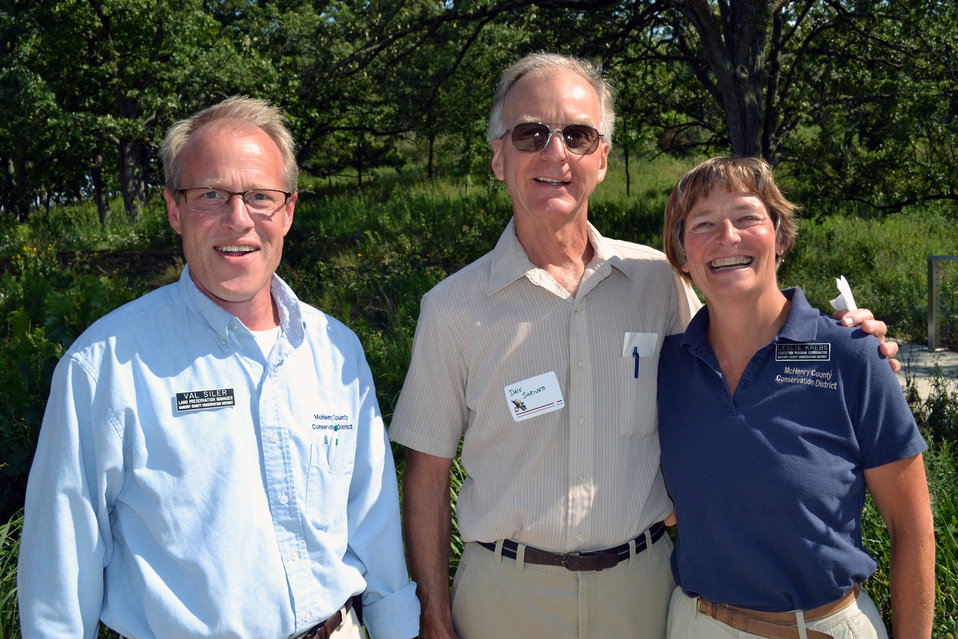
McHenry County Conservation District Staff

Glacial Park was a wonderful backdrop for the event. Thanks to the dedicated McHenry County Conservation District staff for hosting the event.